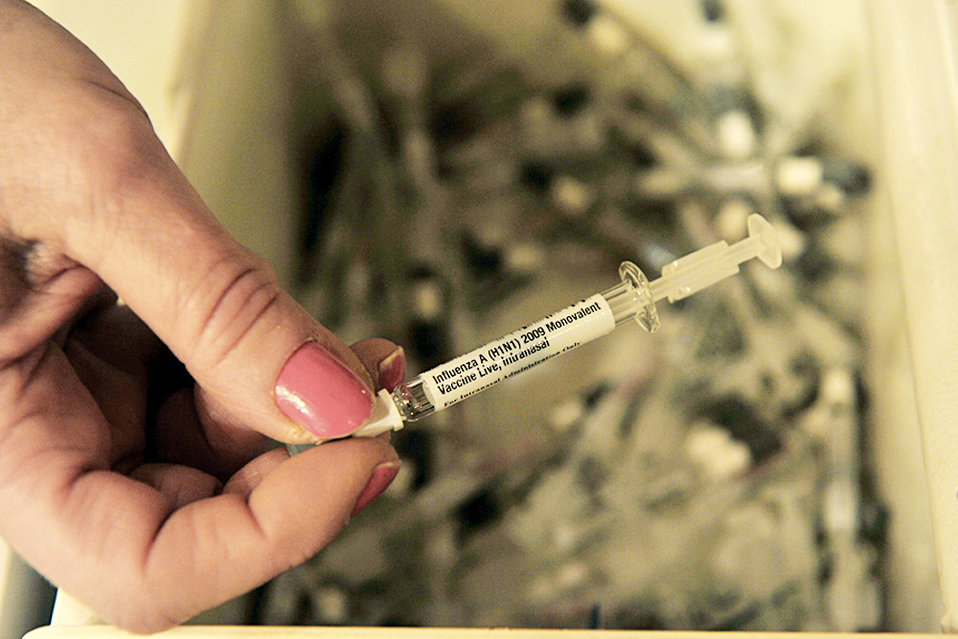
H1N1 up close

Debbie Law holds an H1N1 flu mist nasal container during a point of distribution exercise Jan. 21, 2010, at Offutt Air Force Base, Neb. Ms. Law is assigned to the 55th Medical Operations Squadron.